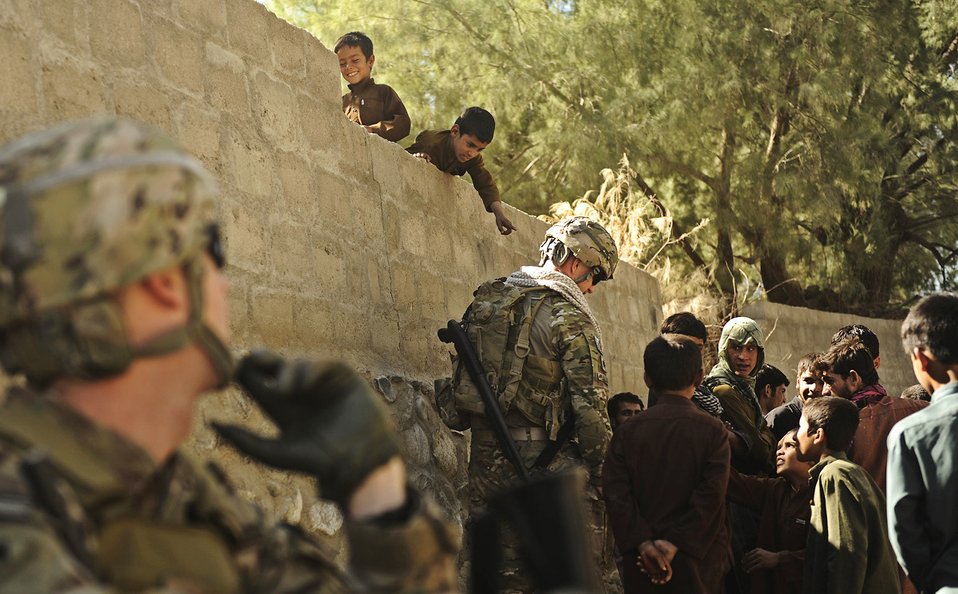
Local visit

A young boy leans over a wall trying to get the attention of Lt. Col. Jayson Allen as he hands out school supplies to a group of children Oct. 14, 2011, in Laghman province, Afghanistan. The PRT traveled to the village of Deh E Ziarat to meet with the village elder and the people to talk about their community. Allen is the Laghman Provincial Reconstruction Team commander.